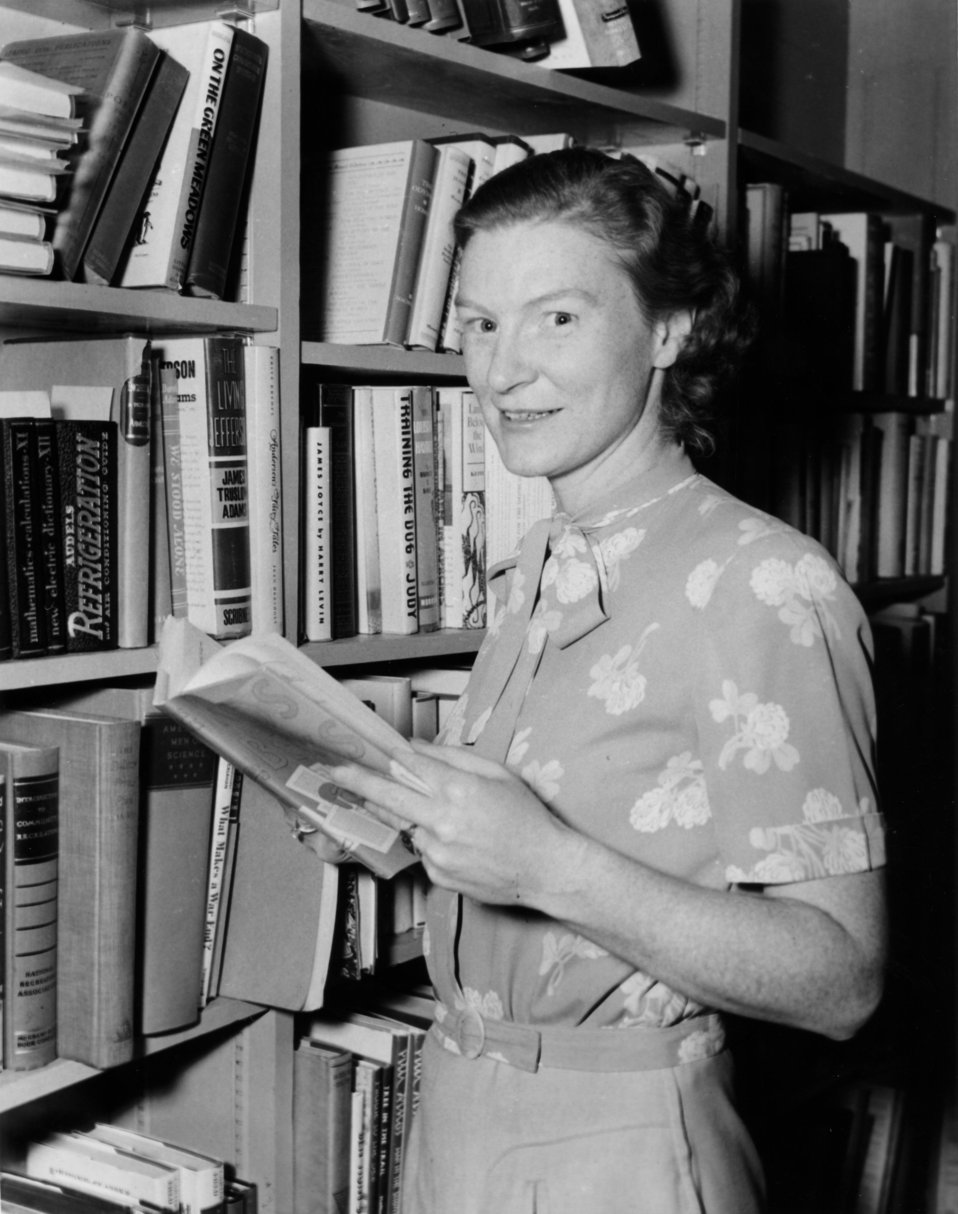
Services at Oak Ridge